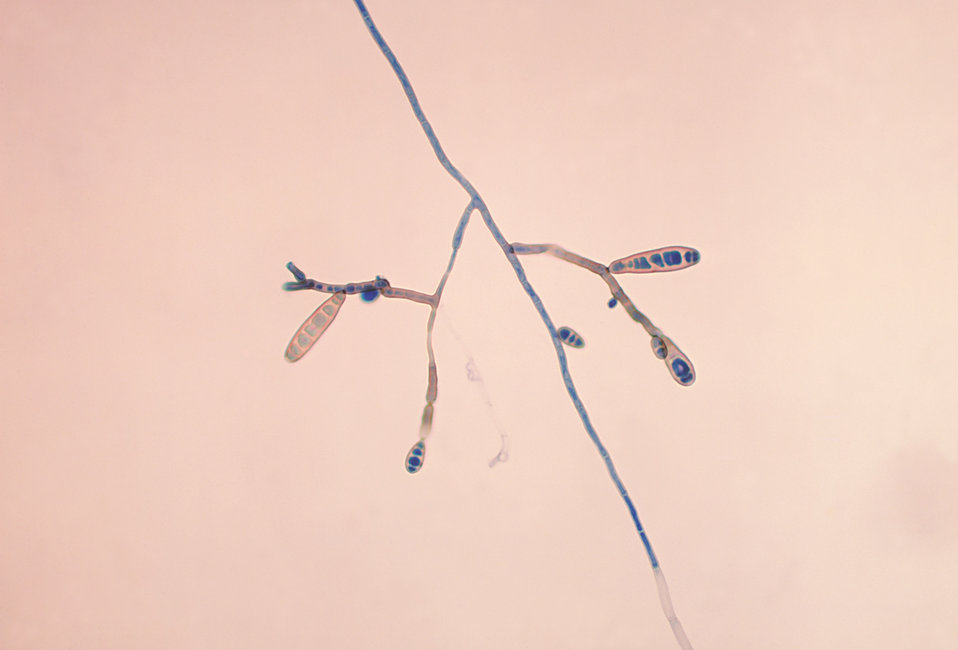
Photomicrograph showing fine branching tubes of Exserohilum rostratum.